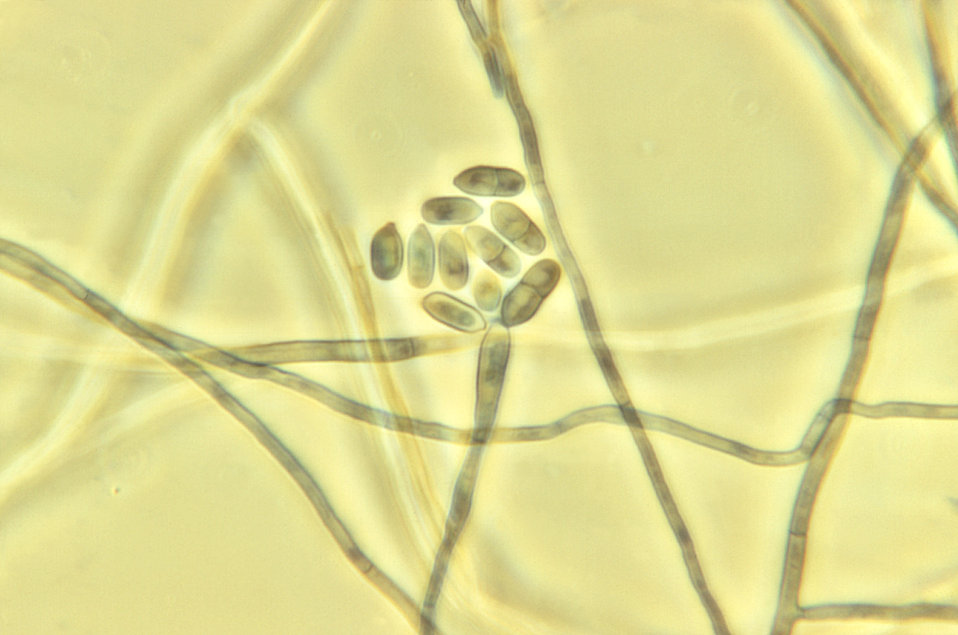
Under a magnification of 1125X, this photomicrograph revealed some of the ultrastructural morphology exhibited by the fungal organism Exophiala brunnea.